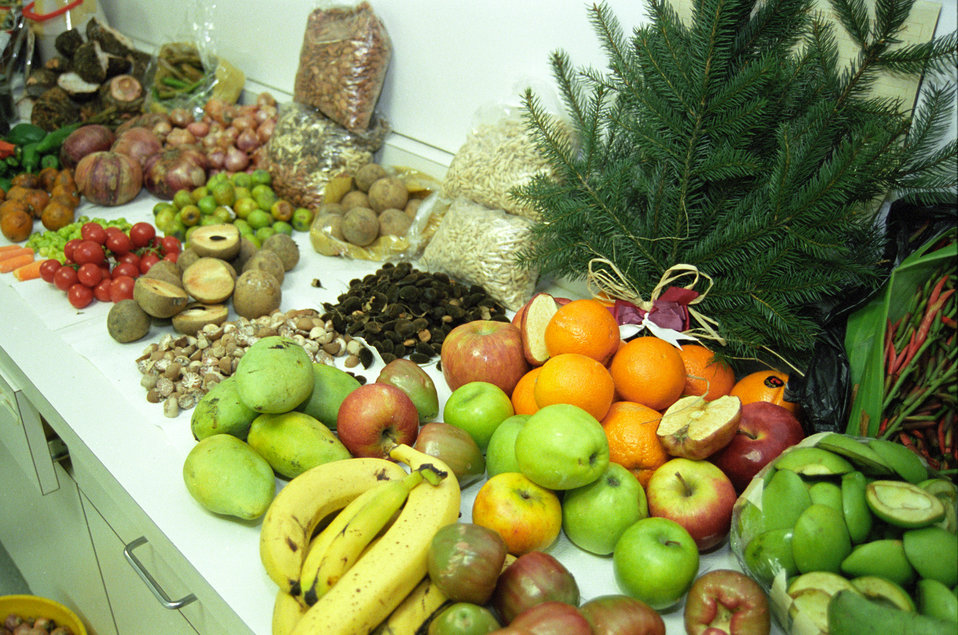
Food contraband intercepted at Washington Dulles International Airport in Chantilly, VA on March 14, 2001 is held for disposal at the airport. The food was concealed in passengers ‘luggage and located by a beagle from the Beagle Brigade. The Brigade is a team of beagles and their human handlers who, as part of the U.S. Department of Agriculture's (USDA) Animal and Plant Health Inspection Service (APHIS) inspect luggage at U.S. airports searching for agricultural products. The Beagle Brigade program averages around 75,000 seizures of prohibited agricultural products a year. Unauthorized meat, animal byproducts, fruit and vegetables can carry diseases and pests that have the potential to infect U.S. agriculture. APHIS works in conjunction with the U.S. Customs and Border Protection and the U.S. Public Health Service at entry points to the U.S., including land borders, ports and airports. The Beagle Brigade generally works in the baggage-claim area at international airports. After 911, the Beagle Brigade is under the authority of Homeland Security.